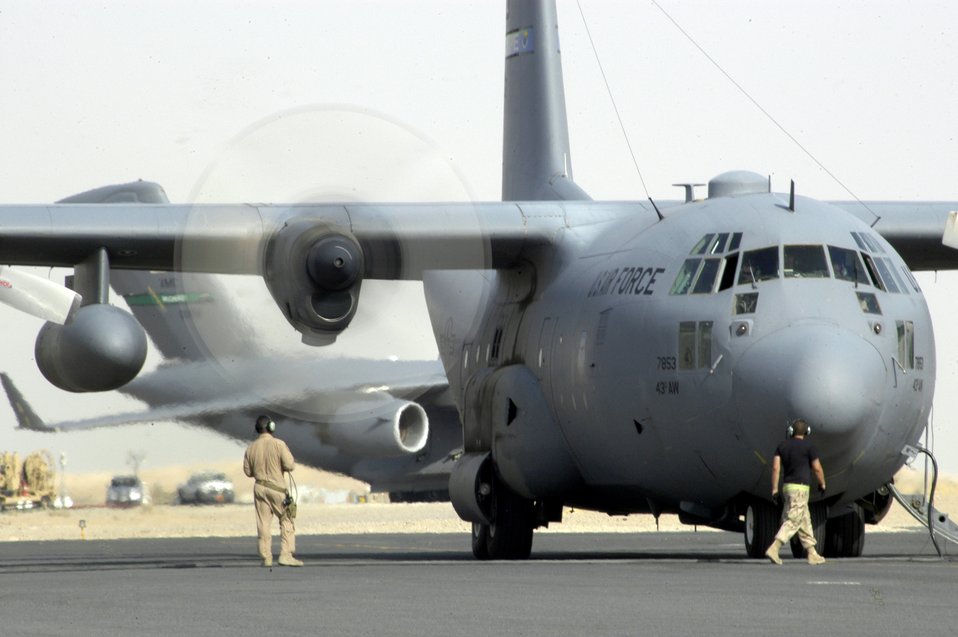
Mighty Hercules

Aircrew and maintainers go over final pre-flight checks on a C-130 Hercules before a mission at a deployed location in Southwest Asia on Tuesday, June 20. The Airmen are with the 386th Air Expeditionary Wing.